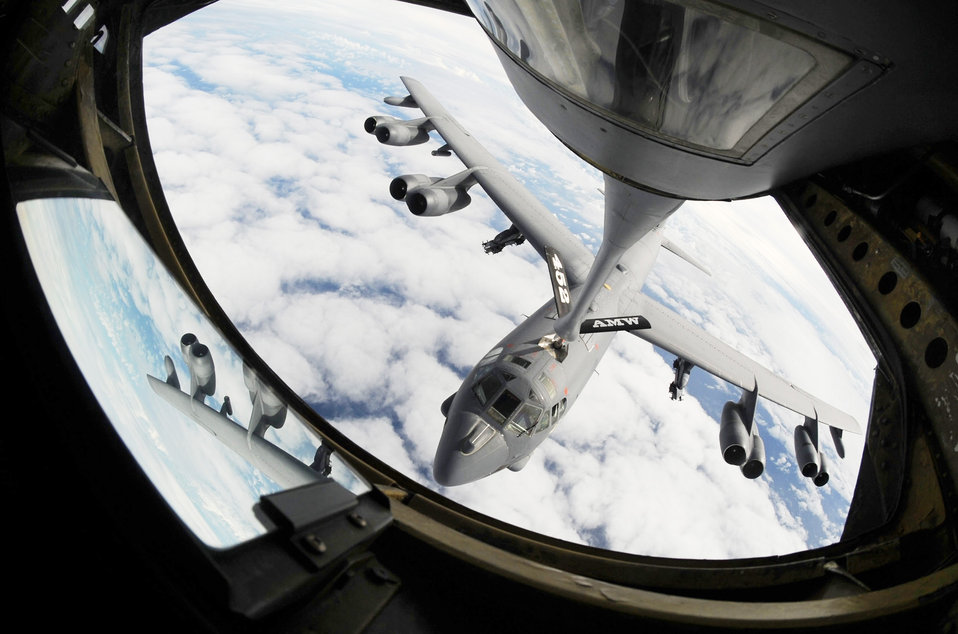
Airmen, KC-135s support exercise in Australia

A KC-135 Stratotanker refuels a B-52 Stratofortress July 13 over the Pacific Ocean during Talisman Saber 09, a U.S. Pacific Command-directed, bilateral command post and field-training exercise designed to maintain a high level of interoperability between U.S. and Australian forces..